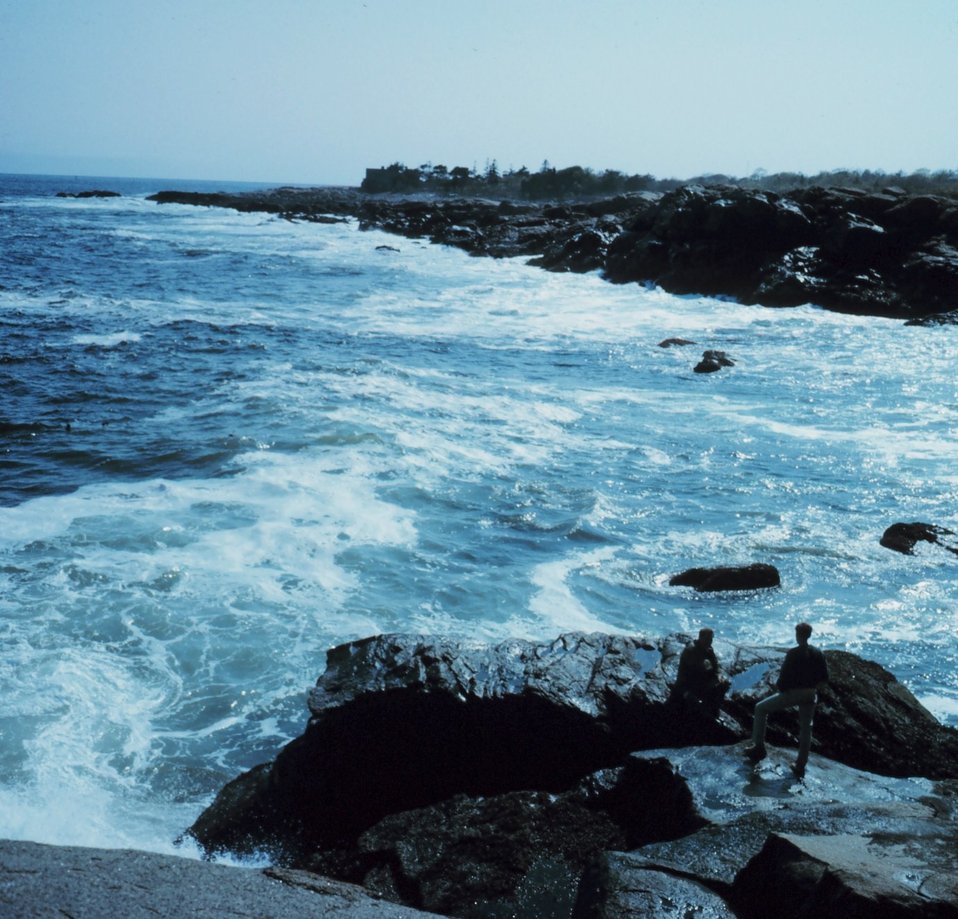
Rocky shoreline